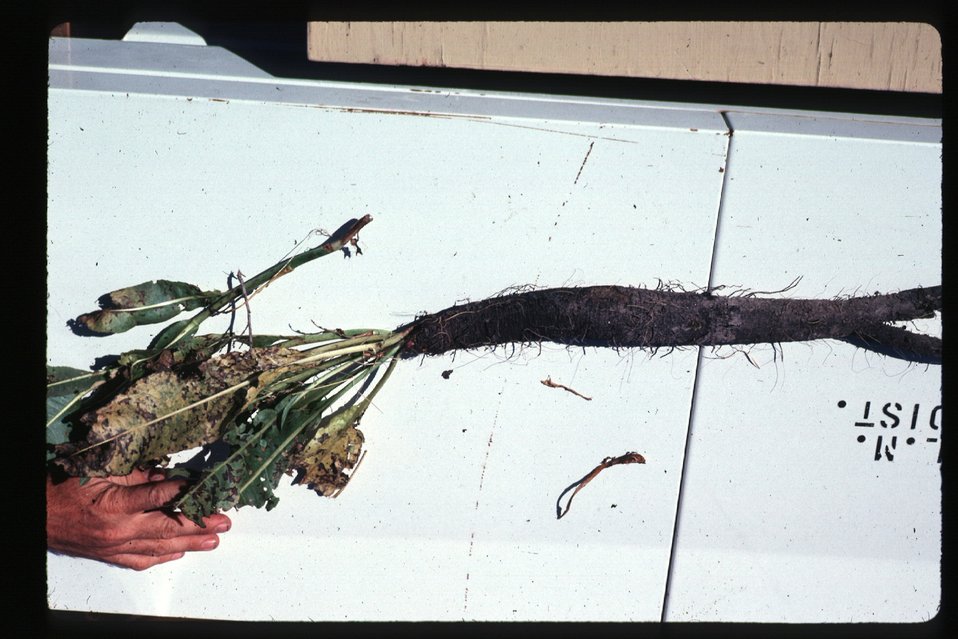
Wyetha root Mules ear Brush, grasses Wildflowers